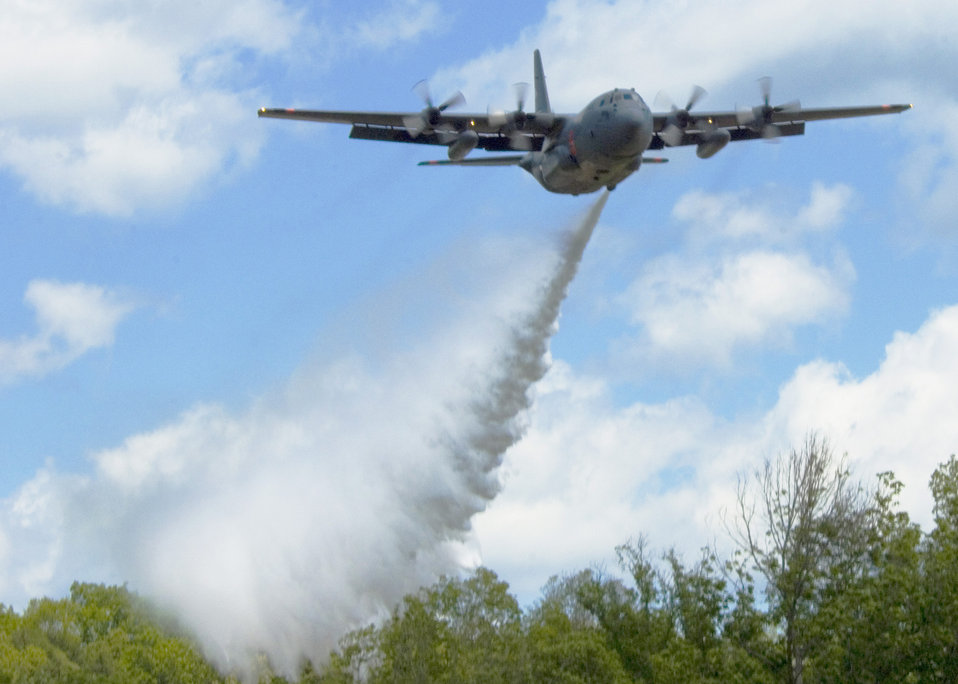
Hitting the mark

A C-130 Hercules drops water over the treetops while training with the Modular Airborne Fire Fighting System near Greenville, S.C., April 28, 2010. The aircraft is from the 302nd Airlift Wing at Peterson Air Force Base, Colo.